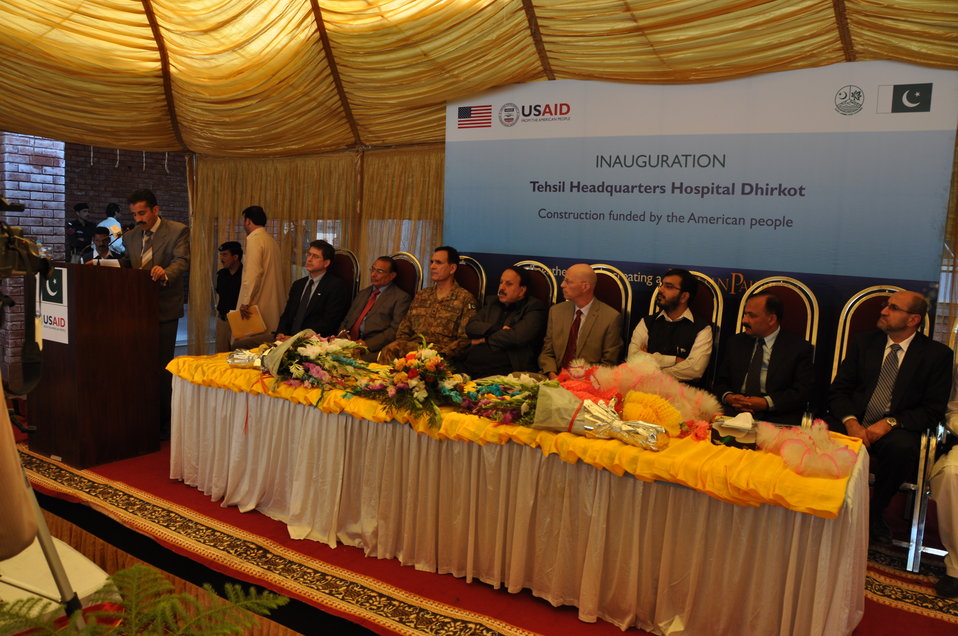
Dhirkot Reconstructed Hospital Inauguration Pakistan Reconstruction Program 19